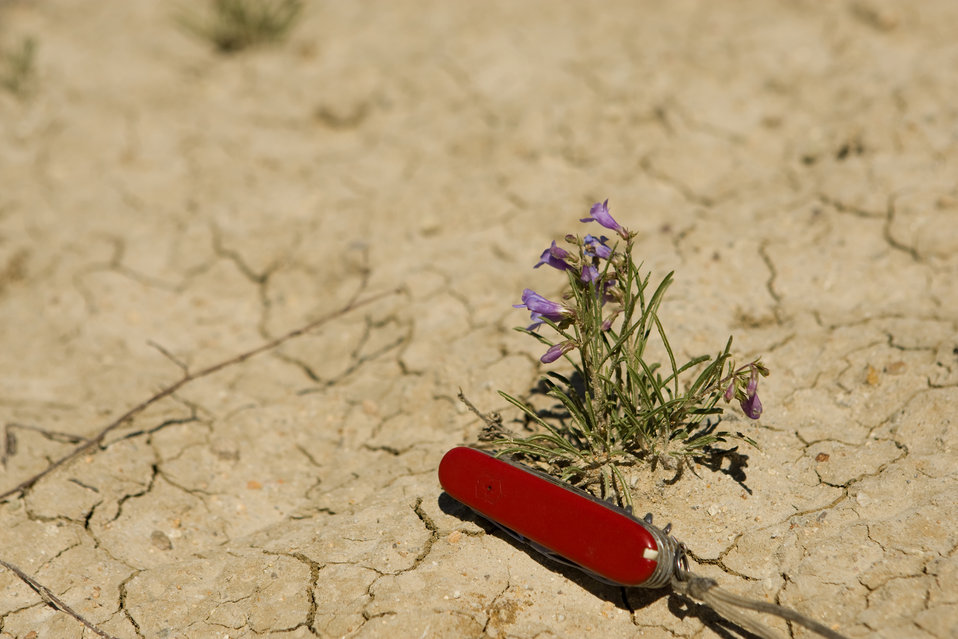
Colorado Rare Plant Conservation Initiative

The Colorado Rare Plant Conservation Initiative (RPCI) is a partnership of 23 statewide and regional agencies, private organizations, and academic institutions working to conserve 121 rare plants in Colorado. As part of these efforts the group developed the Colorado Rare Plant Conservation Strategy, developed Best Management Practices to reduce energy development impacts, addressed climate change, and developed focused strategies for the conservation of individual species at eight priority landscapes. The group has also worked to coordinate volunteer efforts for plant conservation across the state.